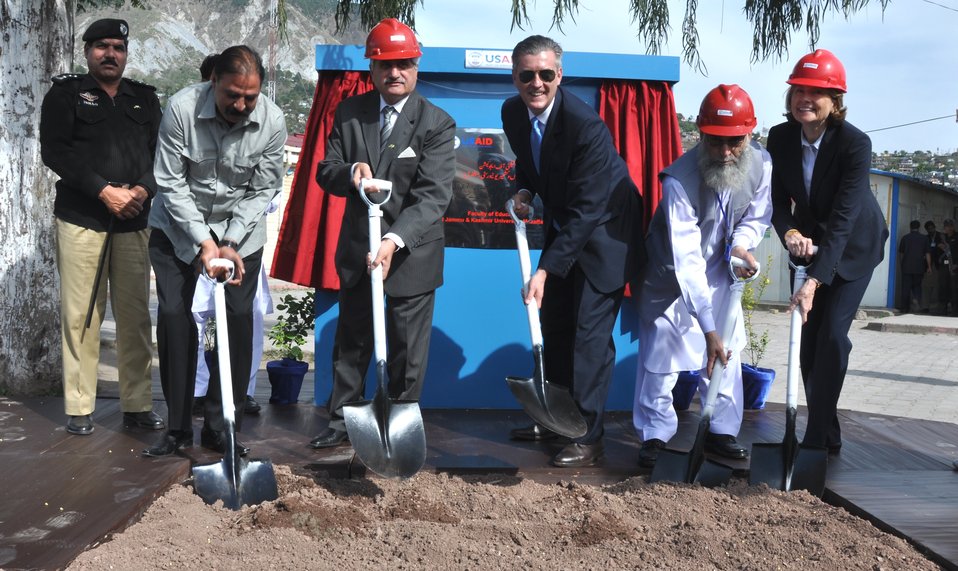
The United States Ambassador to Pakistan, Richard Olson broke ground for a U.S. funded construction of a new Faculty of Education building in Muzaffarabad, AJK. 21